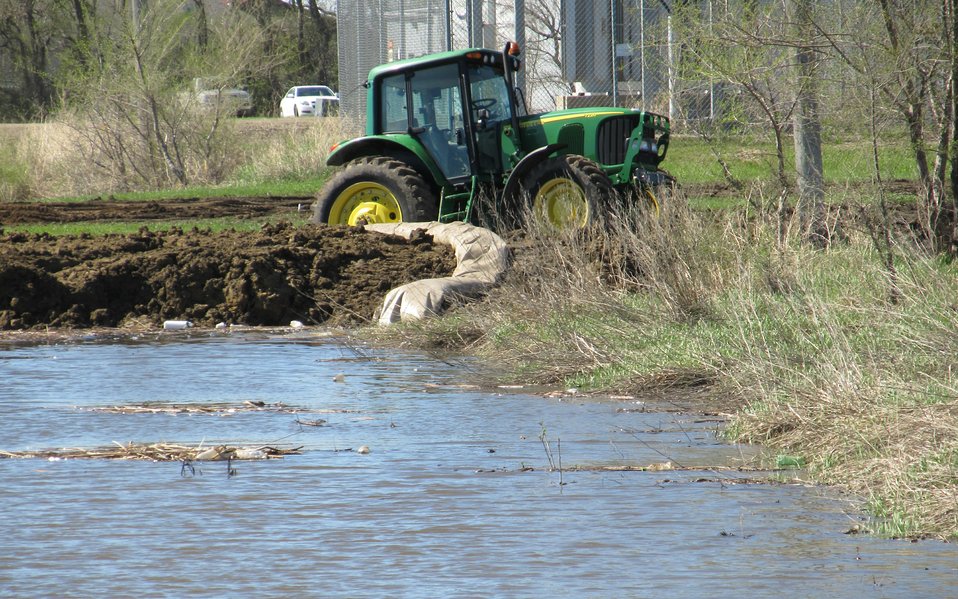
Flooding and water damage in the Park and Tongue River Watersheds located in Cavalier, Pembina and Cavalaier Counties in North Dakota on Thursday, May 23, 2013.